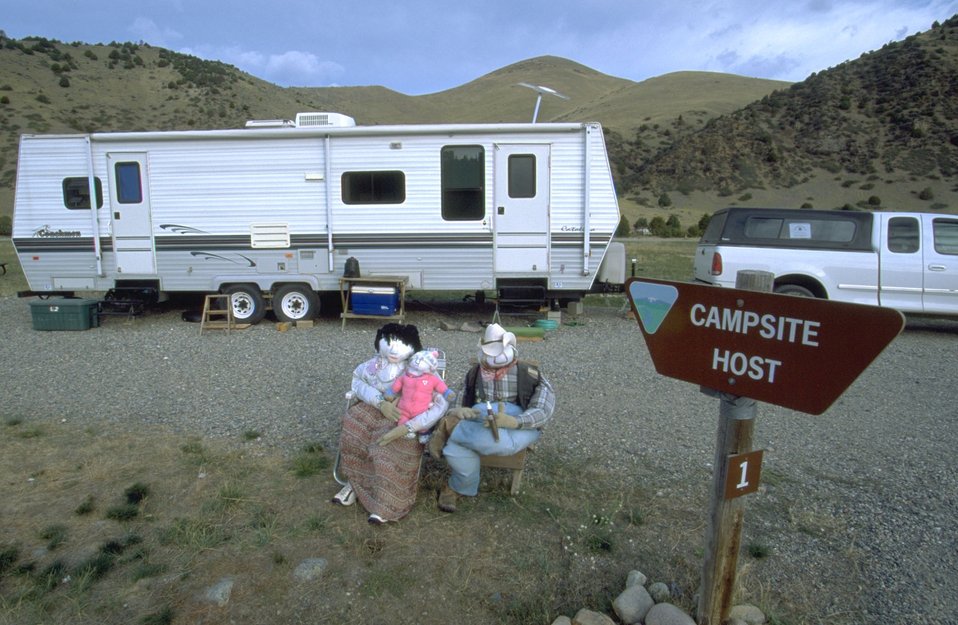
Camp Hosts ""Herschel and Herchetta"" at Red Mountain Campsite